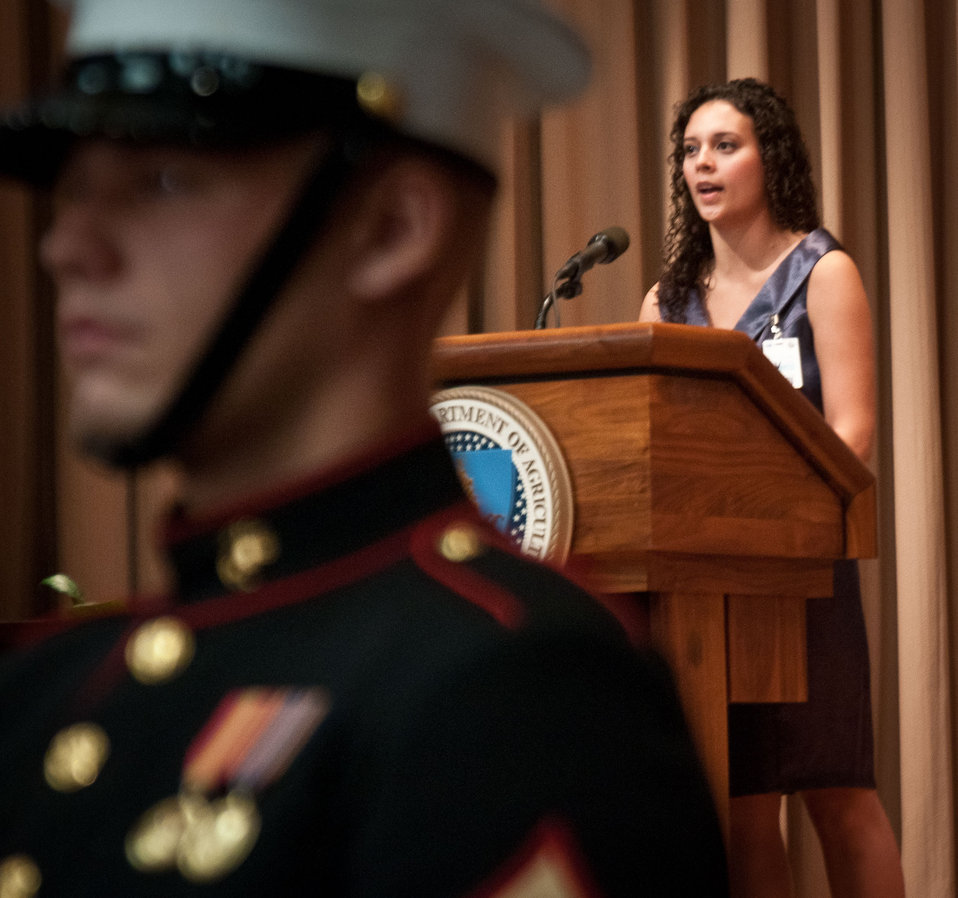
Kristen Donovan (at podium) led the singing of the “National Anthem,” while the Military District of Washington Joint Armed Forces Color Guard presented the colors at the start the National Hispanic Heritage Month observance at the United States Department of Agriculture (USDA), in the Jefferson Auditorium, in Washington, D.C. on Thursday, September 15, 2011.